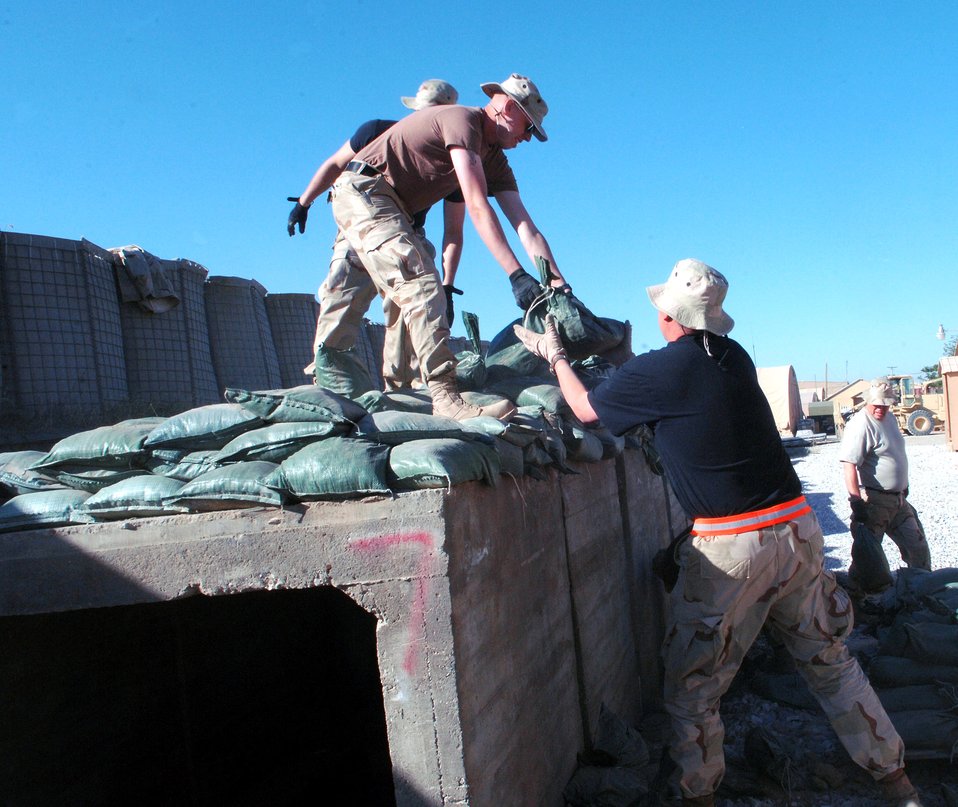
Airmen prepare Afghanistan camp for new living quarters

Airmen from the 455th Air Expeditionary Wing remove sandbags in preparation for an upgrade to the deployed Airmen's living quarters on Camp Cunningham May 22 at Bagram Airfield, Afghanistan. The existing B-Huts the Airmen currently reside in will be relocated to this area to make way for sturdier relocatable buildings. The upgrade is currently scheduled to begin with eight B-Huts.